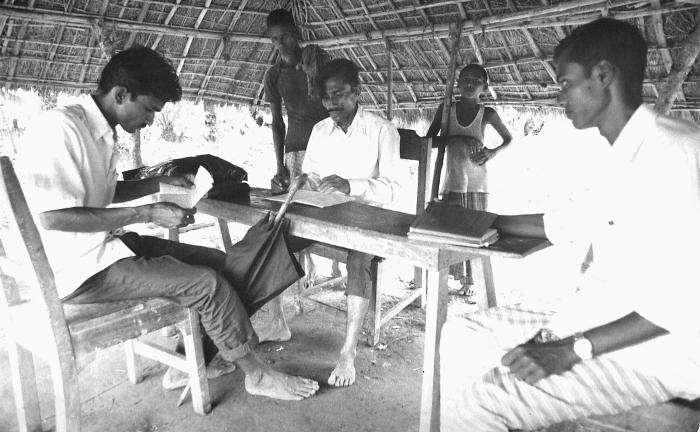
These local Bangladesh men were analyzing collected data under a field hut location. The keeping of detailed records was extremely important, and is one of the hallmarks of properly practiced epidemiologic science. Smallpox cases that were uncovered had to be followed to a successful outcome, as well as anyone associate through close contact with any confirmed smallpox case. Local residents who became resident vaccinators, played a profound role in achieving a successful outcome to the eradication program. As locals, they were viewed as familiar, and trusted, and spoke the local dialect, thereby, facilitating enhanced communication with fellow inhabitants.